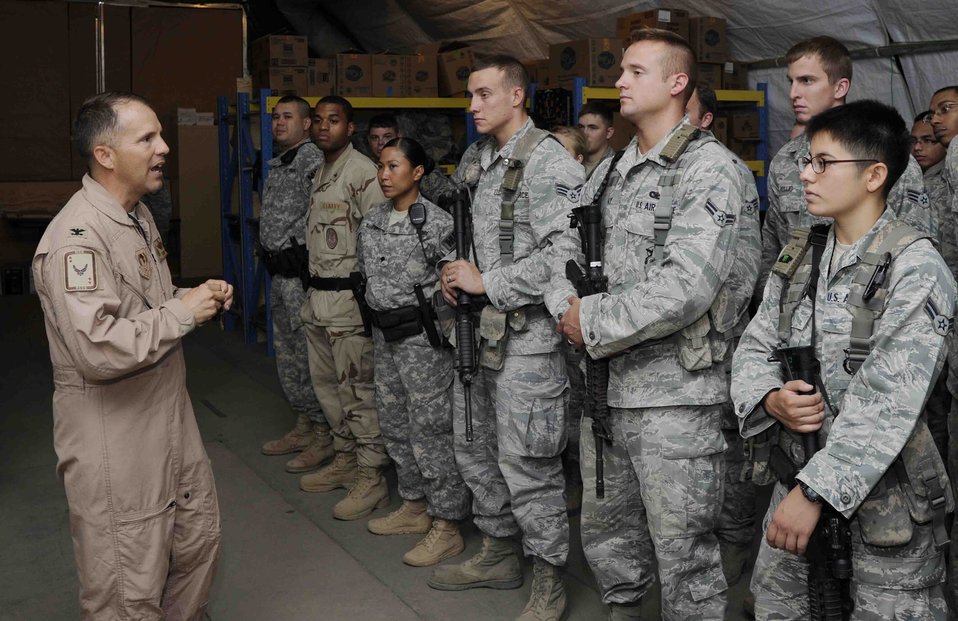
Security joins forces

Col. Dean Lee, , addresses a joint force of U.S. Army, Navy and Air Force security personnel regarding how crucial it is to work together to accomplish the mission at Camp Lemonnier, Djibouti, on July 17. The mission of Combined Joint Task Force - Horn of Africa, one of the U.S. Africa Command components stationed at Camp Lemonnier, is to conduct operations in the combined joint operations area to enhance partner nation capacity, promote regional stability, dissuade conflict, and protect U.S. and coalition interests. Lee is the 449th Air Expeditionary Group commander.